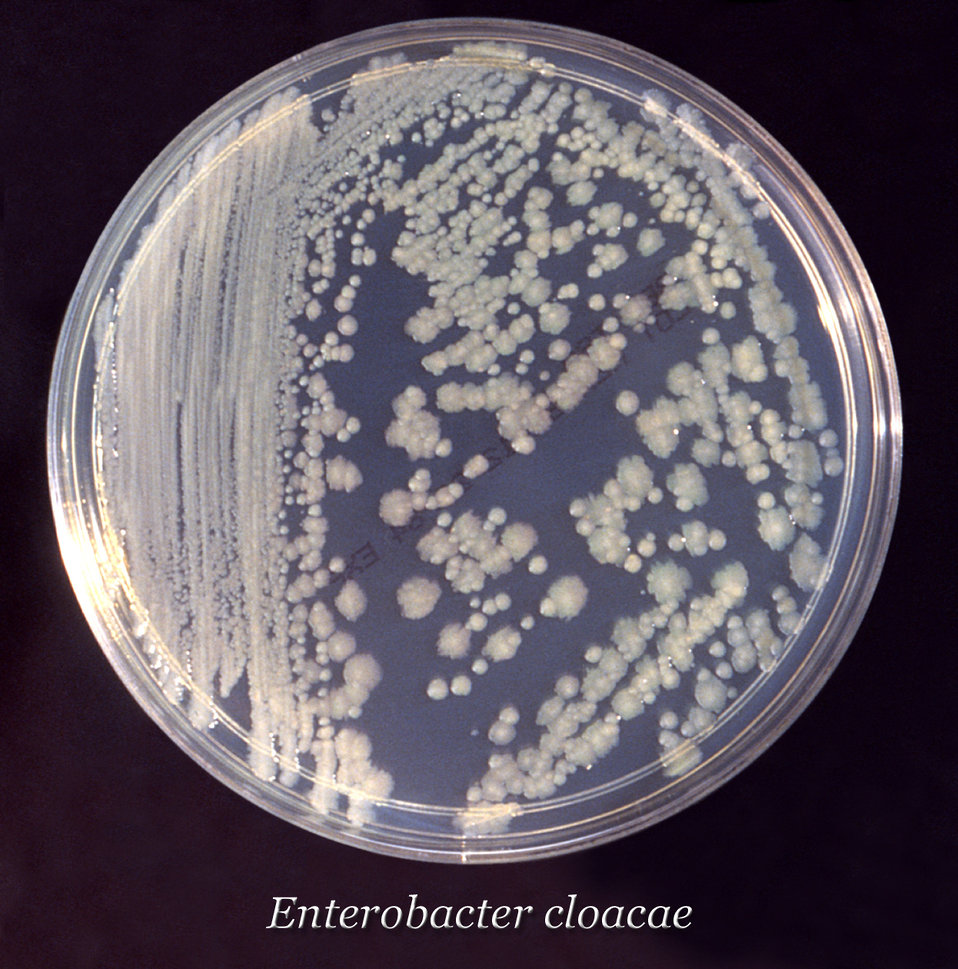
After 24 hours, this trypticase soy broth (TSB) agar showed both rough, and smooth colonial growth of Enterobacter cloacae bacteria.